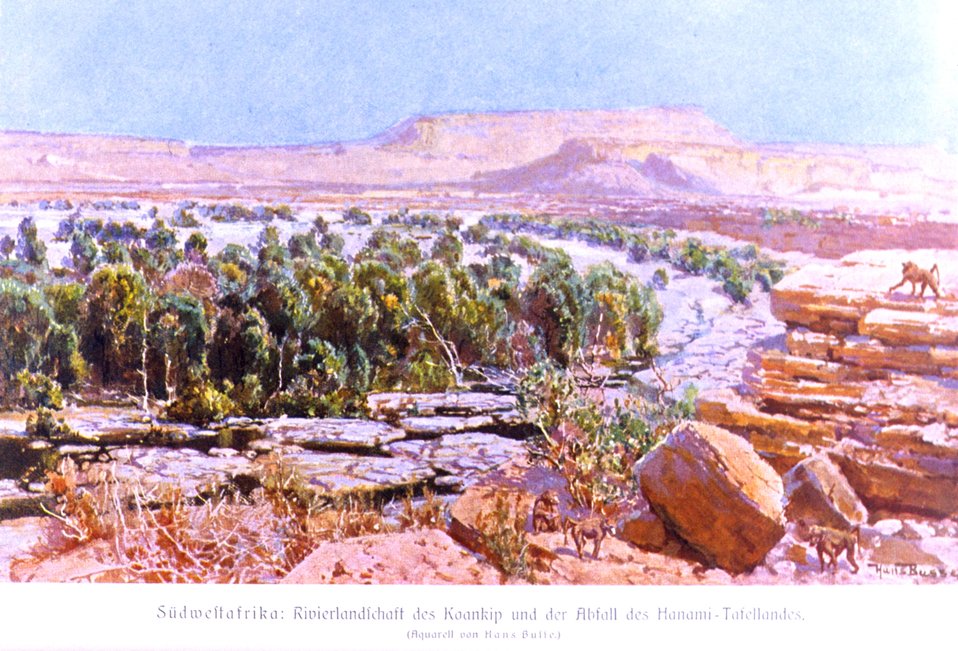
A view of the tablelands of German Southwest Africa. In: 'Das Deutsche Kolonialreich,' by Hans Meyer, 1909. Vol II, p. 218. Library Call Number: Cfd M612 d